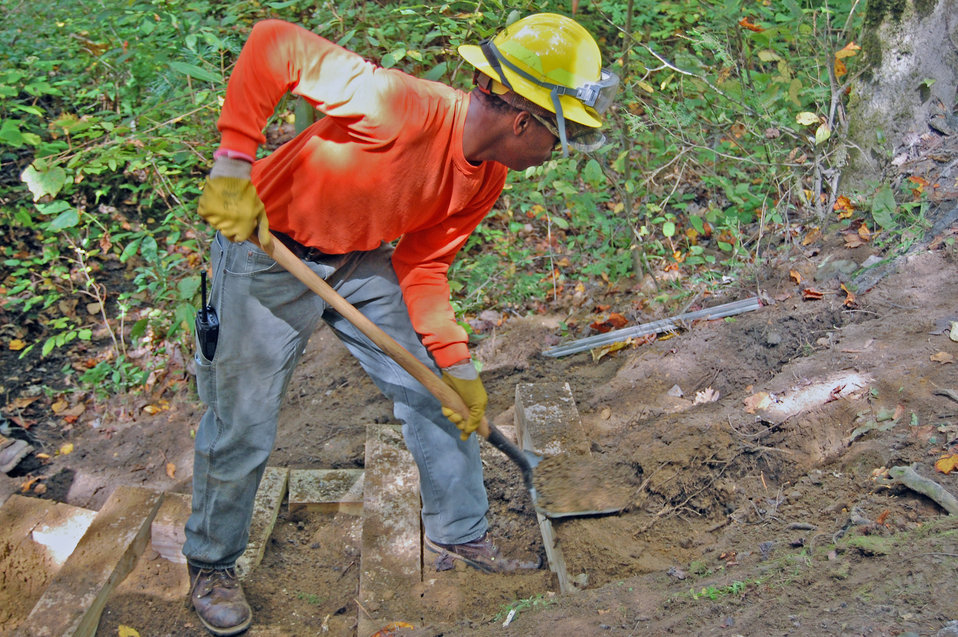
North Carolina Forest Service Job Corps student improves a historic site. Forest Service Job Corps student Jay Williams digs out a new footer for the next step in a stairway for increased angler access along Santeetlah Creek on the Nantahala National Forest in NC on Sept. 29, 2012.